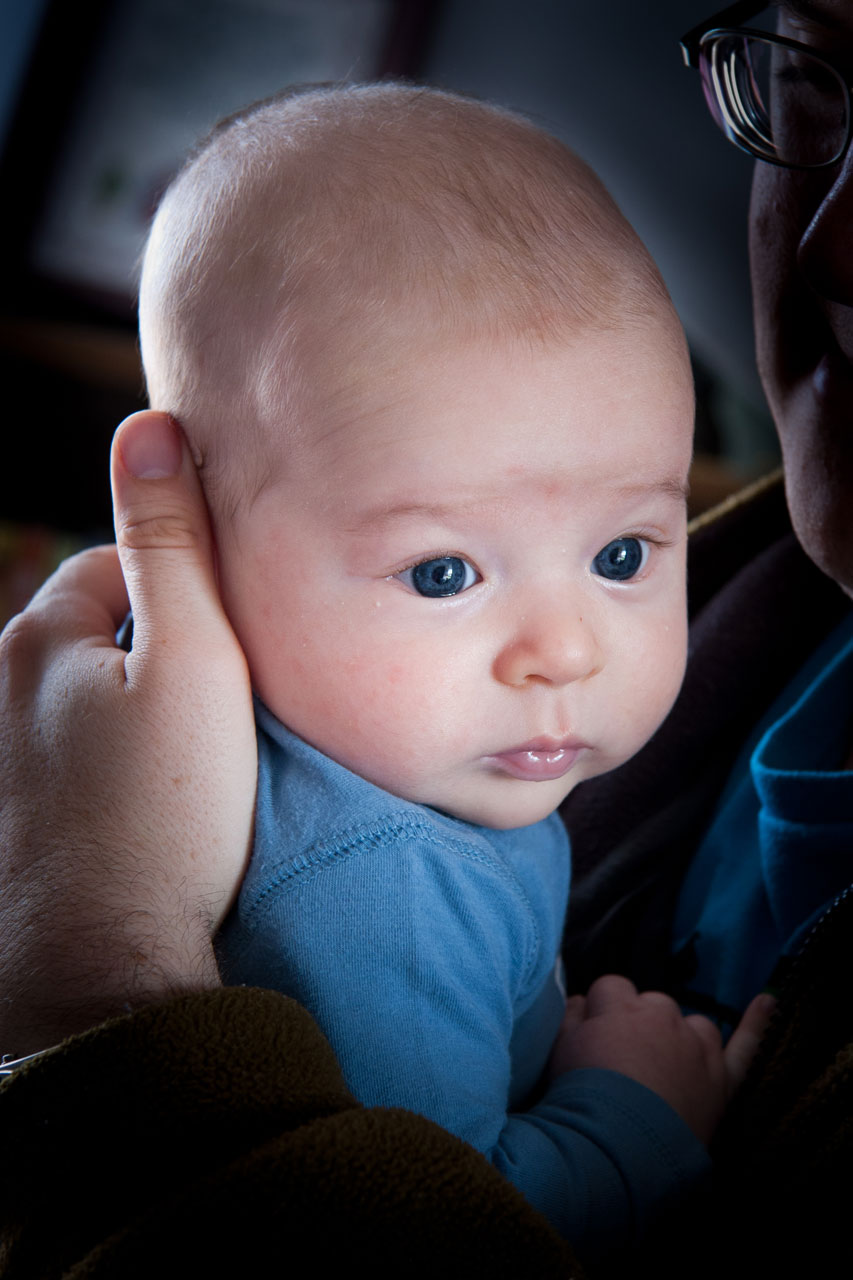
Pensive baby

Portrait of a baby boy, two months old.